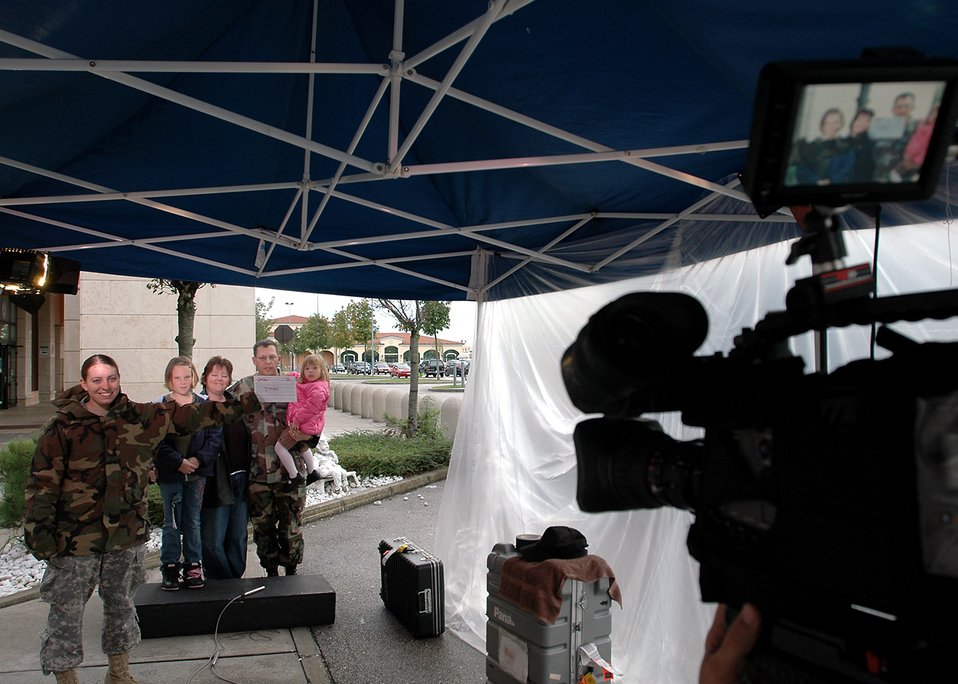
Holiday greetings program producing more than 7,000 'Hi moms'

Army Pfc Samantha Ciaramitaro holds up slate during the taping of a holiday greeting by the Stark family at Aviano Air Base, Italy, for family and friends back in the U.S. An Army and Air Force Hometown News